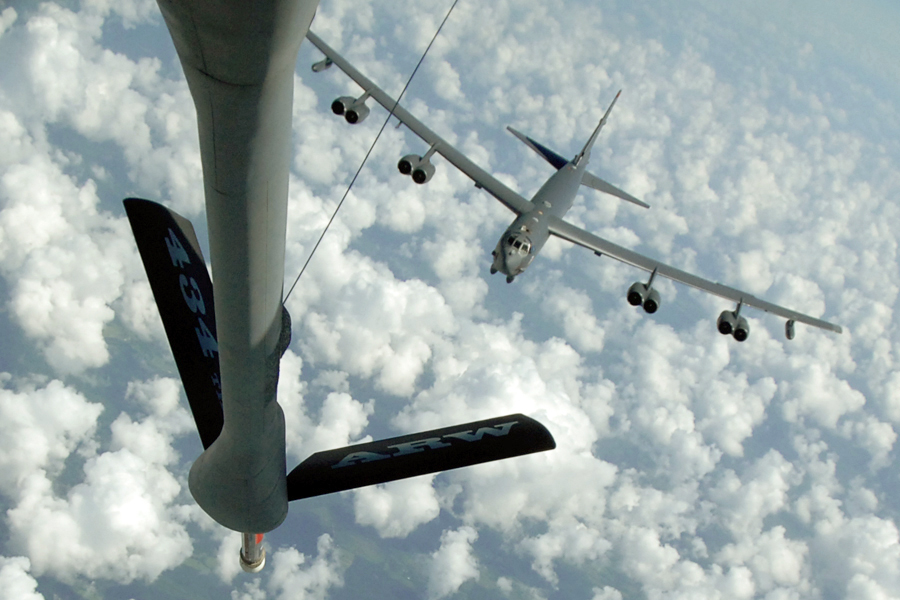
Coming at ya!

A B-52 Stratofortress from the 2nd Bomb Wing at Barksdale Air Force Base, La., flies in behind a KC-135R Stratotanker as it prepares to refuel July 21, 2010, over Indiana. The KC-135 and its crew are from the Air Force Reserve Command's 74th Air Refueling Squadron out of Grissom Air Reserve Base, Ind.